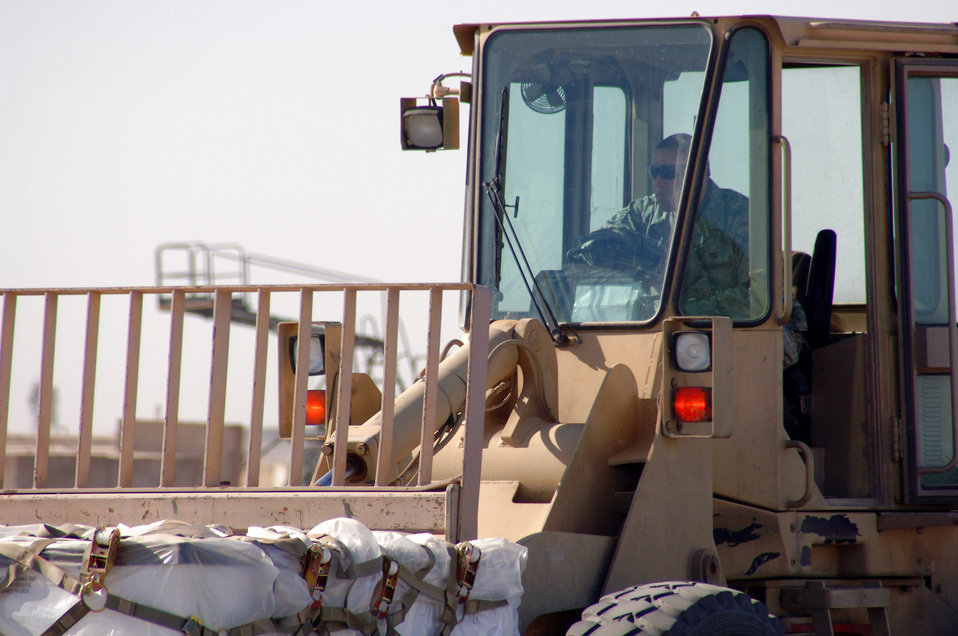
Aerial porters keep convoys off the road

Staff Sgt. Manuel Torres moves cargo in the aerial port yard at Balad Air Base, Iraq. Sergeant Torres, an aerial port flight ramp service technician with the 332nd Expeditionary Logistics Readiness Squadron, is a reservist deployed from the 88th Aerial Port Squadron at McGuire Air Force Base, N.J.